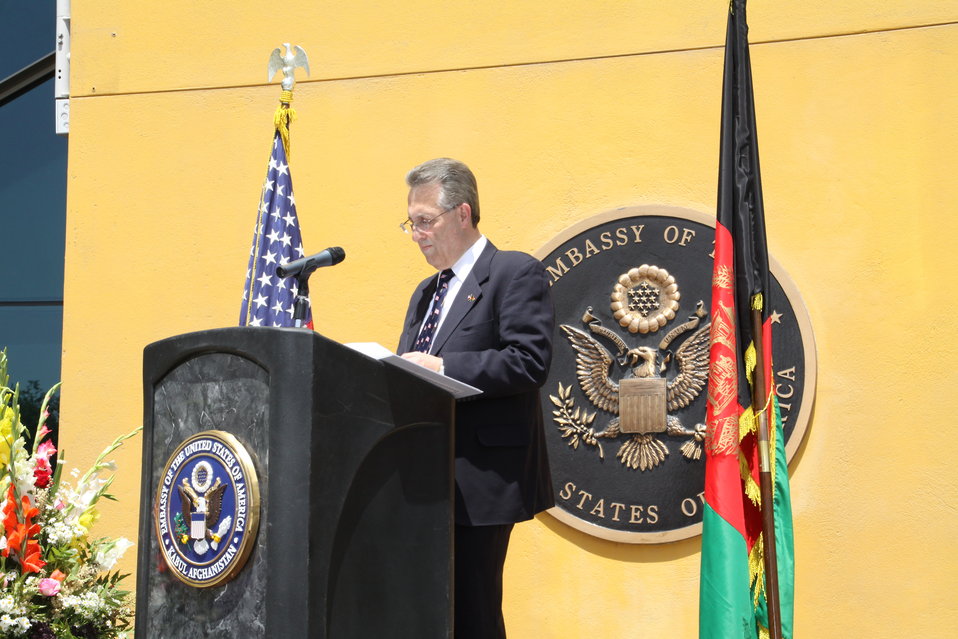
Kabul Official July 4th Celebration